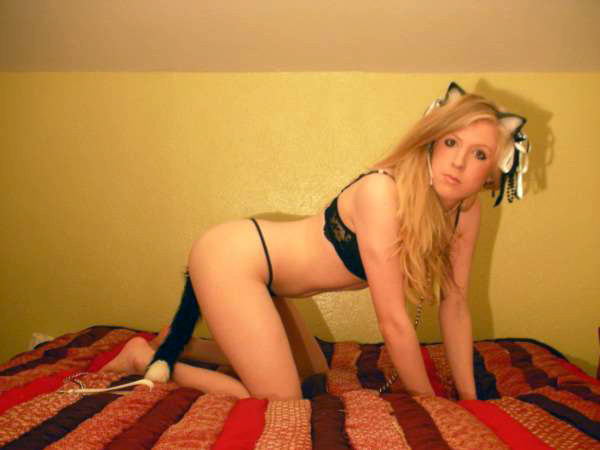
MissIsibella, portrait